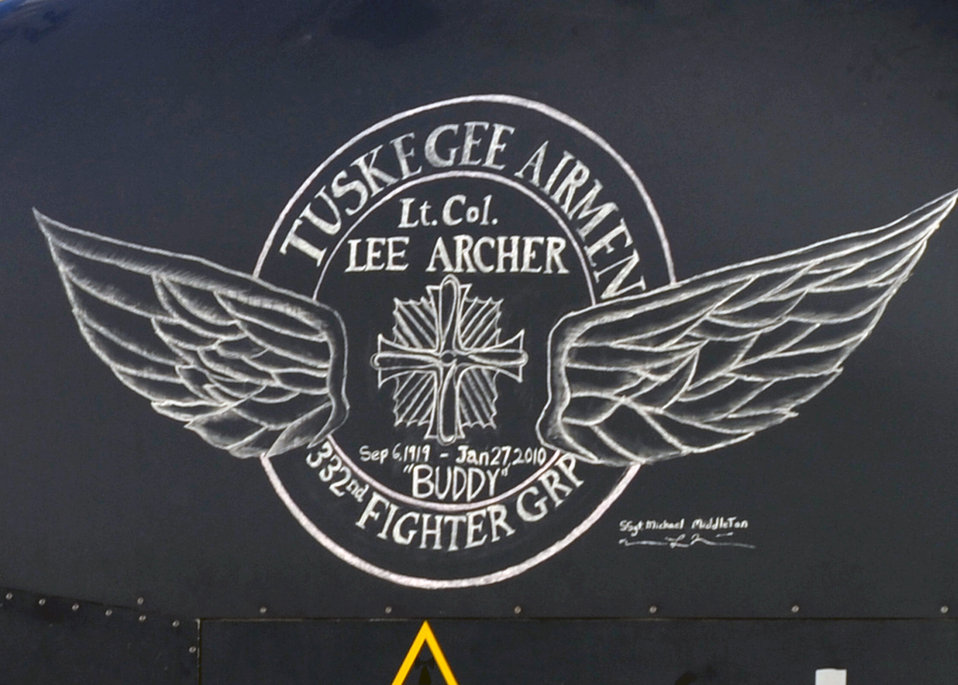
Deployed Airmen honor Tuskegee great with nose art

Created by Staff Sgt. Michael Middleton, a new chalk nose art is displayed on an RQ-4 Global Hawk assigned to the 380th Air Expeditionary Wing at an air base in Southwest Asia Feb. 12, 2010. The nose art honors Tuskegee Airman Lt. Col. Lee Archer who died Jan. 27 at the age of 90 in New York City.